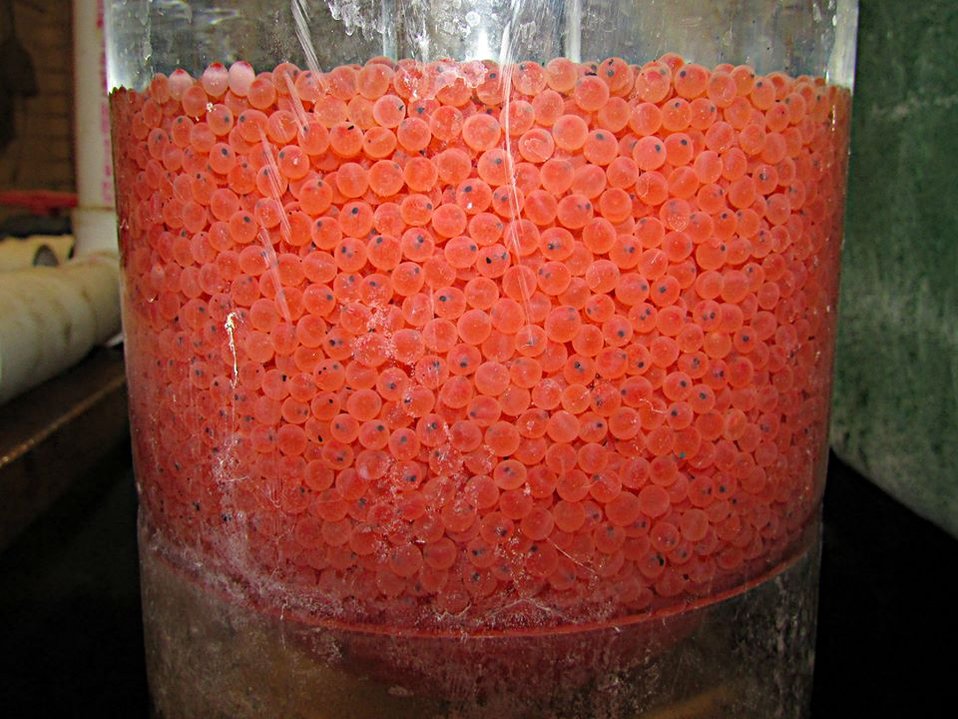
Caviar

At the end of January we received 20,000 rainbow trout eggs from the Ennis National Fish Hatchery. They hatched in early February and will be stocked out this fall. If you look closely, you can see the eyes of the trout before they even hatch!